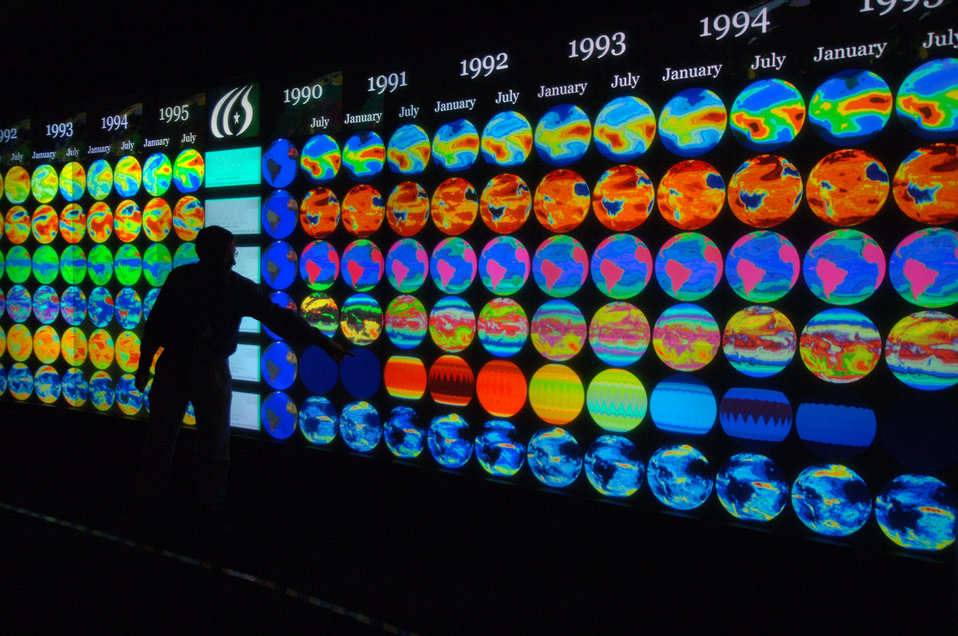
Everest Powerwall

05-290-395 DOE photo by Lynn Freeny

Everest Powerwall, a 30-foot screen for scientific study at Oak Ridge National Lab Oak Ridge Tennessee 10-20-2005